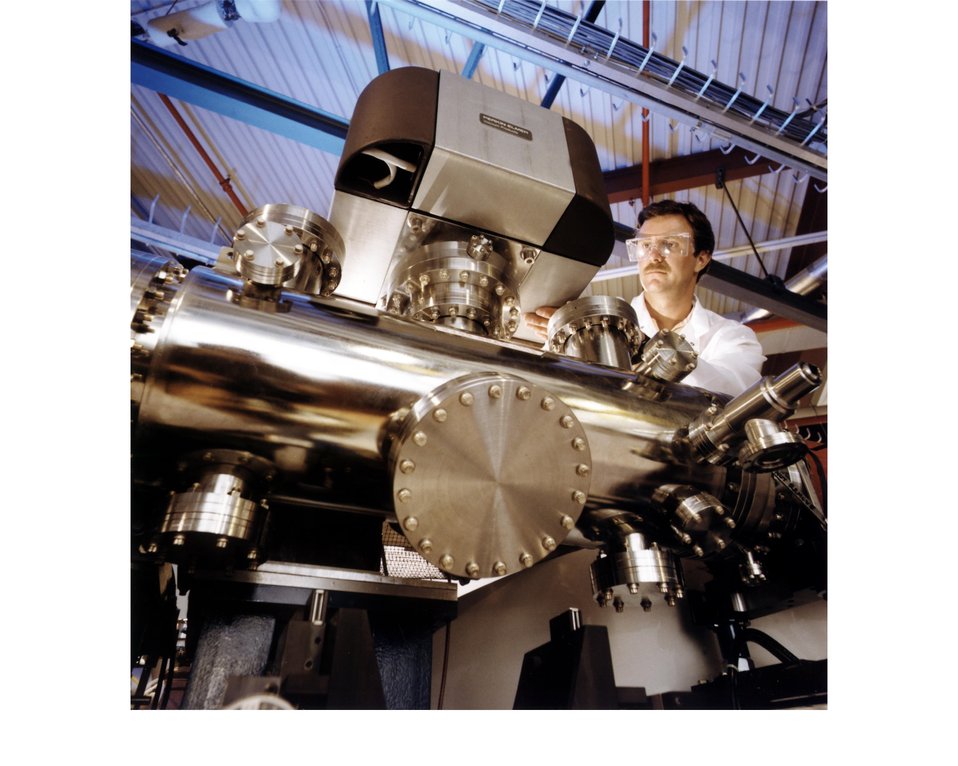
BROOKHAVEN SCIENTIST AT THE NATIONAL SYNCHROTRON LIGHT SOURCE.

THE NSLS IS THE WORLD'S MOST POWERFUL AND VERSATILE SOURCE OF SYNCHROTRON RADIATION. THE NSLS PROVIDES INTENSE BEAMS OF X-RAYS AND ULTRAVIOLET LIGHT FOR USE BY SCIENTISTS FROM ALL OVER THE COUNTRY FOR RESEARCH IN PHYSICS, CHEMISTRY, BIOLOGY AND VARIOUS TECHNOLOGIES.